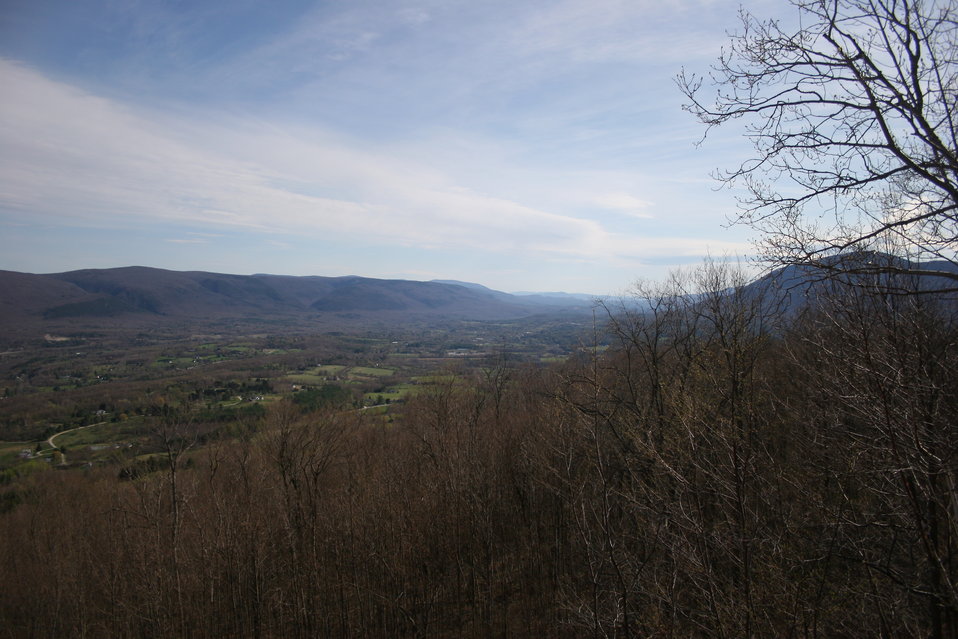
View from the hike to Mt. Aeolus Cave